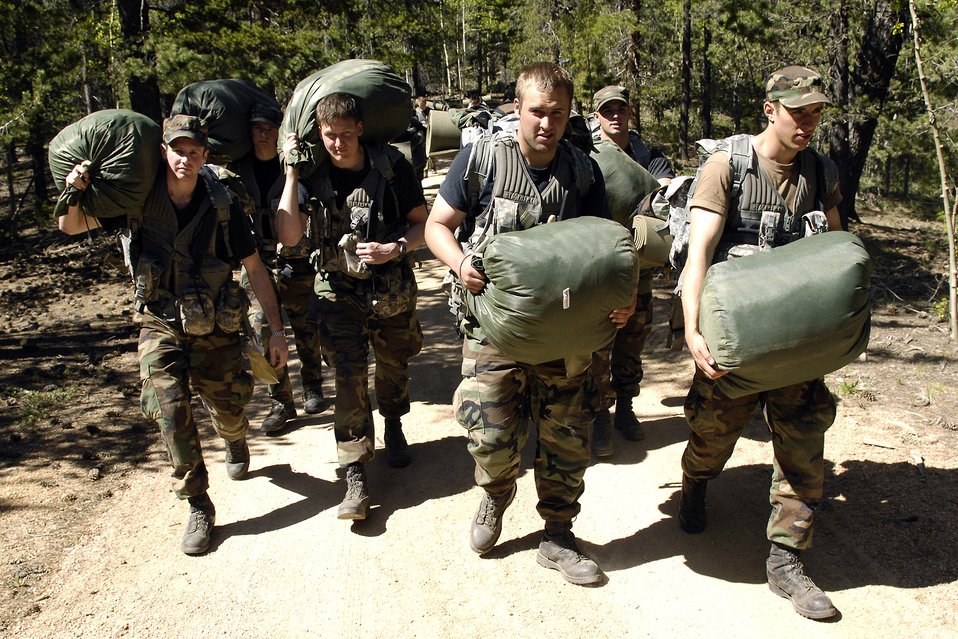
Cadets train in survival, evasion, resistance, escape

Air Force Academy cadets enter a wooded area June 9, where they will set up camp in Saylor Park, Colo. More than 600 cadets are being trained as instructors in survival, evasion, resistance and escape tactics during the 2008 summer period.